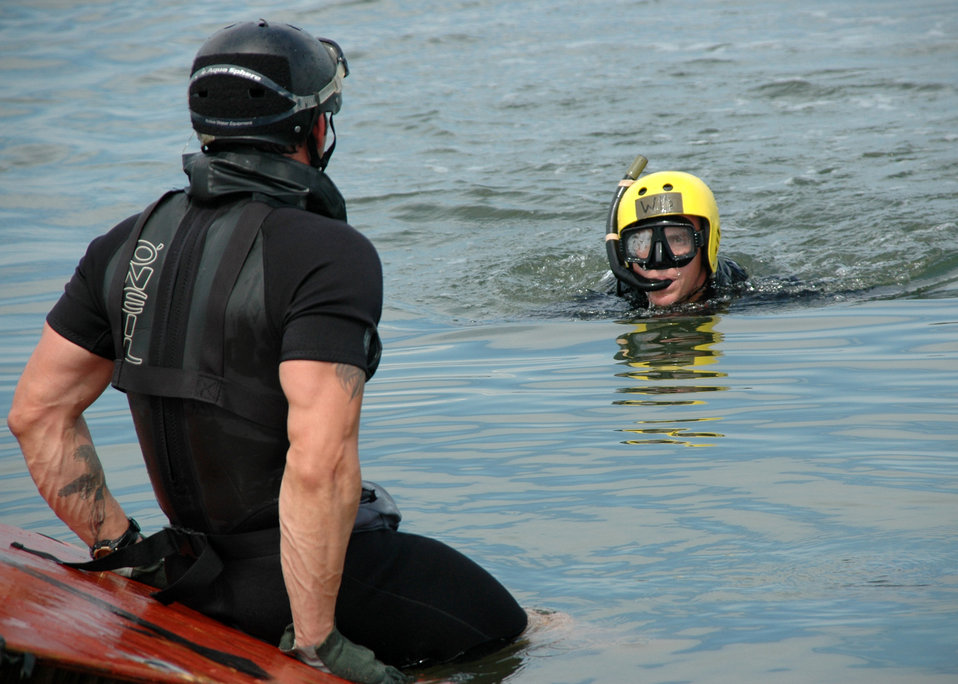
Swim Faster

Tech. Sgt. Will Wilis, Pararescue Instructor 342nd Training Squadron (front), reaches Rigging Alternate Method Zodiac package first as Staff Sgt. Josh Webster and other air-dropped PJ trainees swim to unpack it.